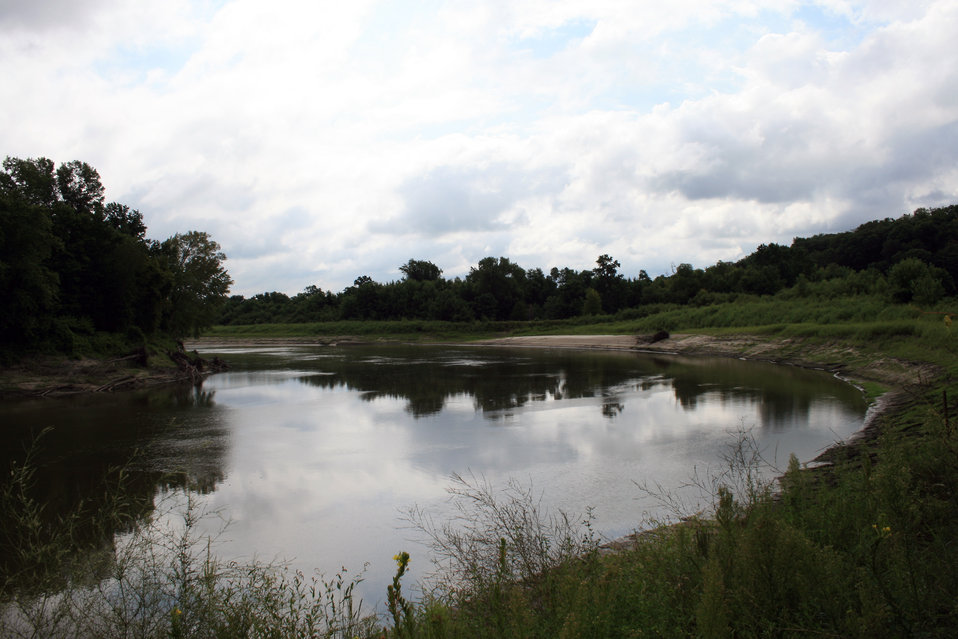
Minnesota River.